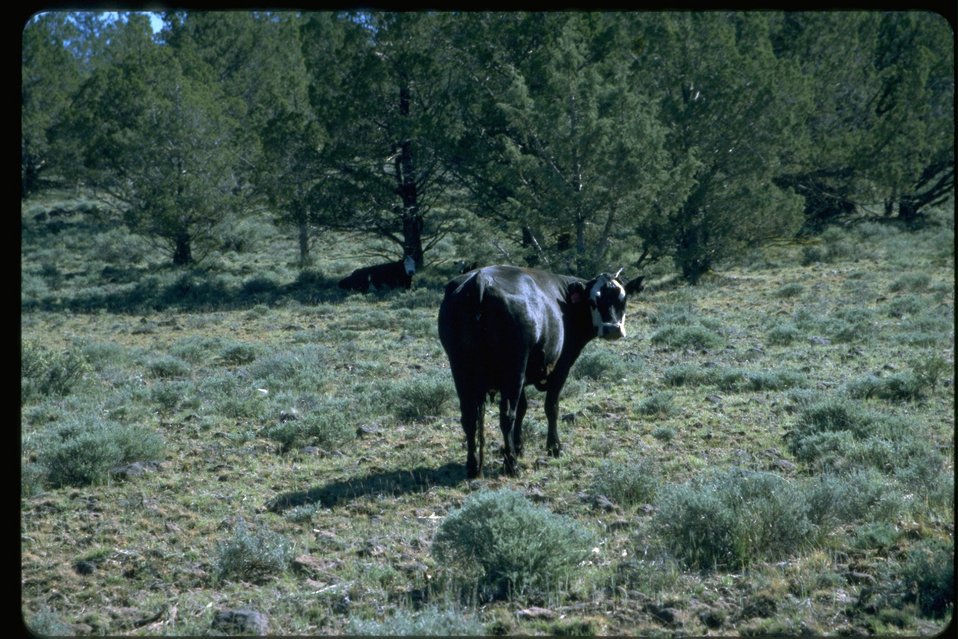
Cattle grazing.